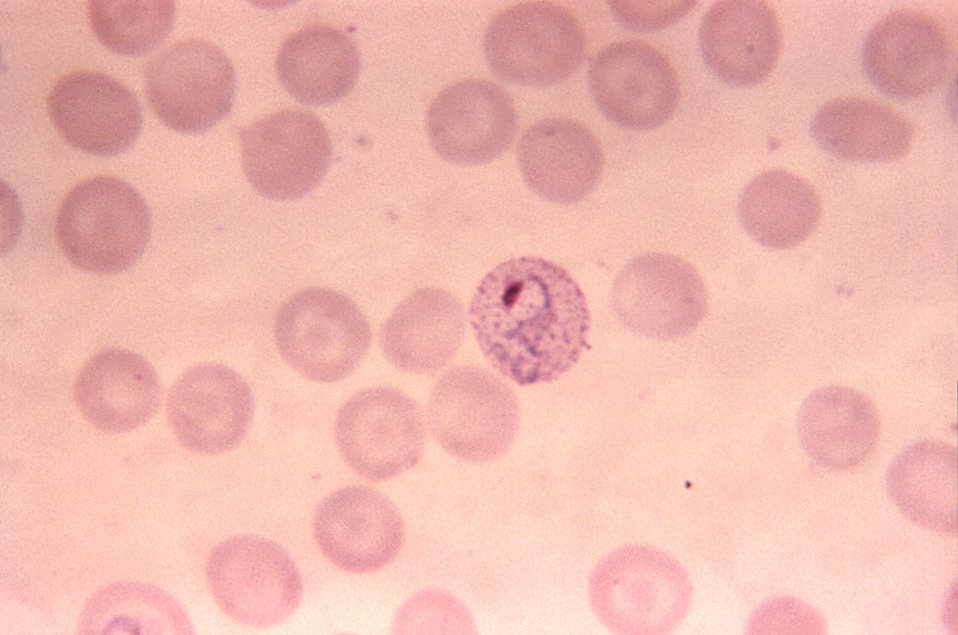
Plasmodium vivax trophozoite in blood smear.